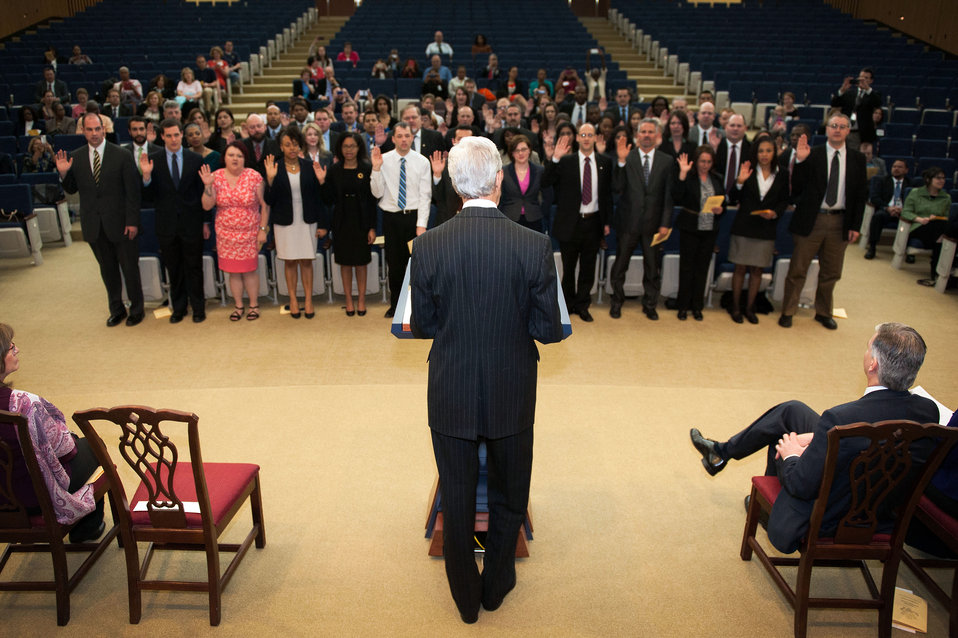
Secretary Kerry Swears in the 103rd Civil Service Class

U.S. Secretary of State John Kerry swears in the 103rd Civil Service Class at the U.S. Department of State in Washington, D.C., on April 25, 2014.